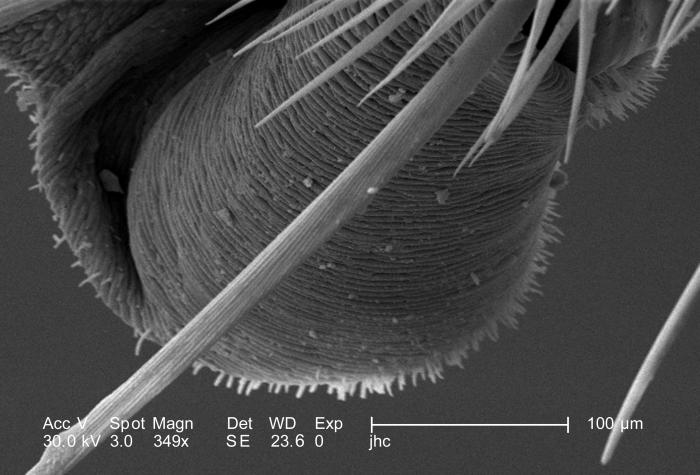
This scanning electron micrograph (SEM) is the third in a series of five PHIL images, 10106, 10107, 10108, 10109, and 10110, depicting the distalmost exoskeletal morphology found on one of the six legs of an unidentified hornet found in the suburbs of Decatur, Georgia. Under a magnification of 349X, what this SEM reveals is the anatomical configuration of what is termed the leg's 'pretarsus' or 'claw', but in particular the 'arolium', which is centered between the two distal claws.The insect leg is usually composed of six segments: the proximal 'coxa', which attaches the leg to the thorax, followed distally by the leg's trochanter, femur, tibia, tarsus, and pretarsus, which in some insects, as is the case of this hornet, is in the form of a 'claw'.